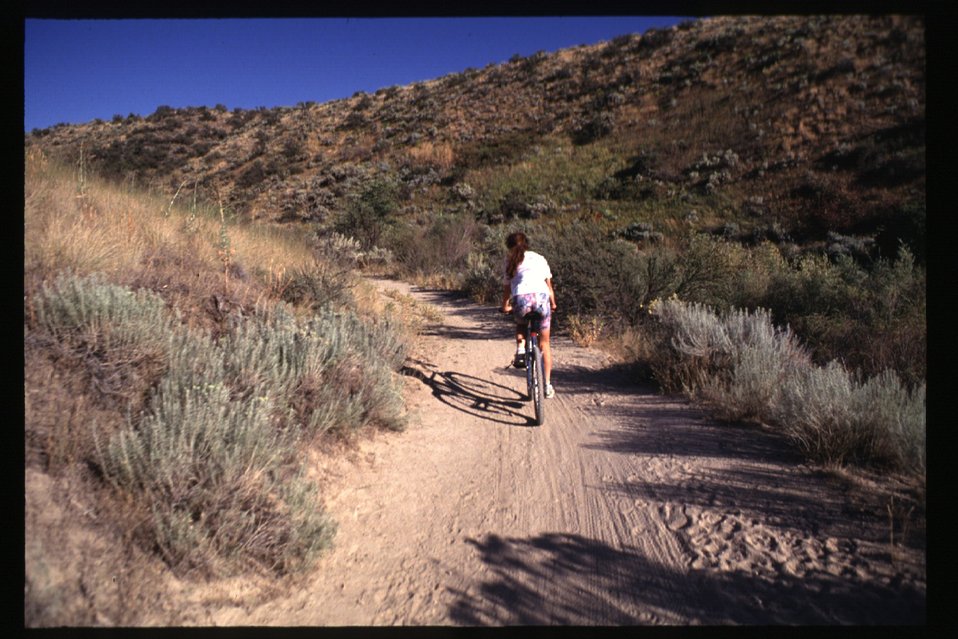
Bikers on Boise Foothills Boise Front bicyclists Four Rivers Field Office LSRD Lower Snake River District